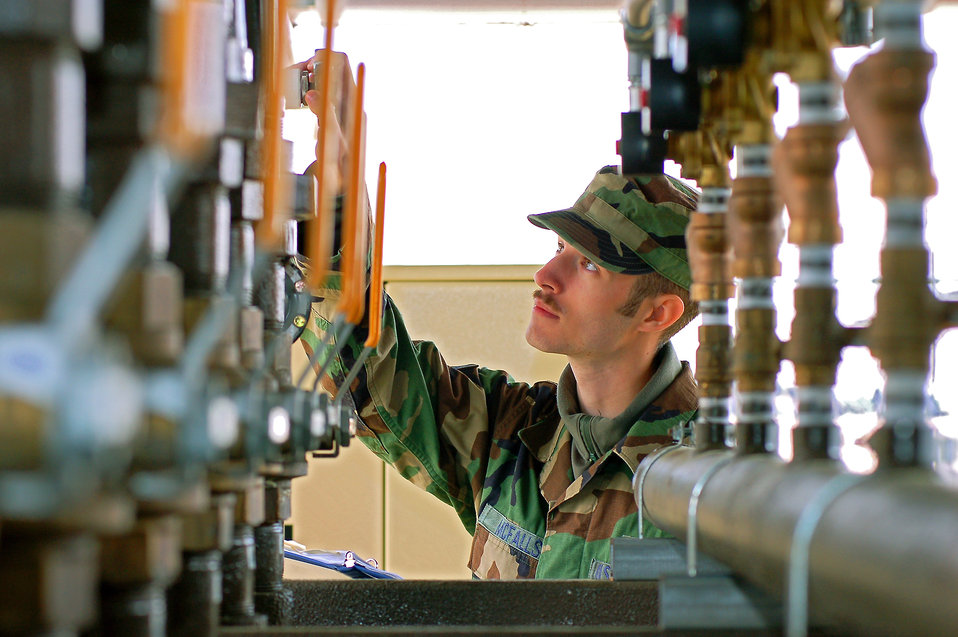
Propane plant fuels utility alternatives for Moody

Senior Airman Steven McFalls checks a valve during a safety inspection Feb. 12 at Moody Air Force Base, Ga. The mixing plant is capable of providing 10 days of gas to the base during winter consumption rates without resupply. Airman McFalls is a 23rd Civil Engineer Squadron liquid fuels journeyman.